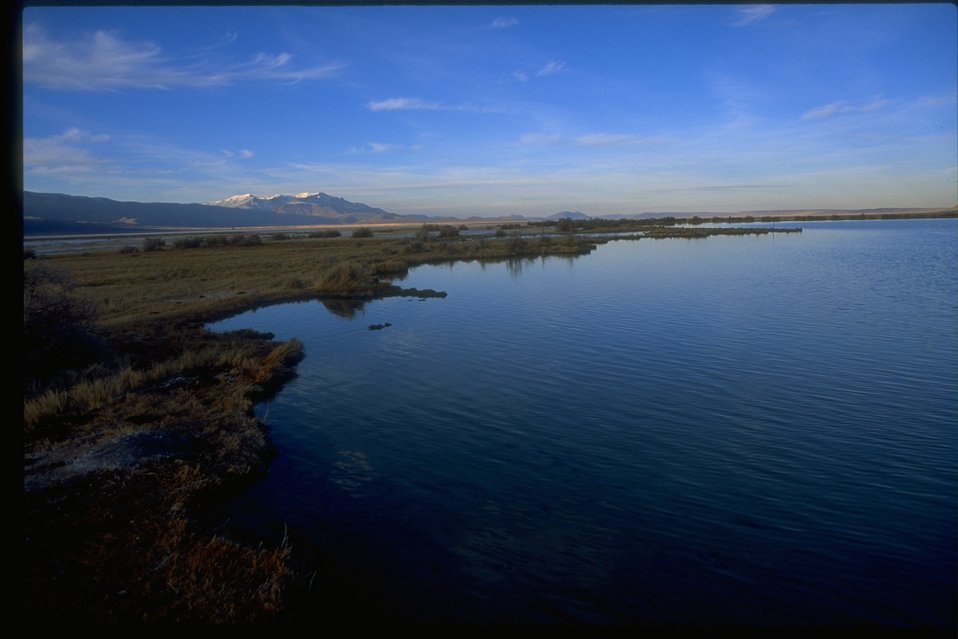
Borax Lake.